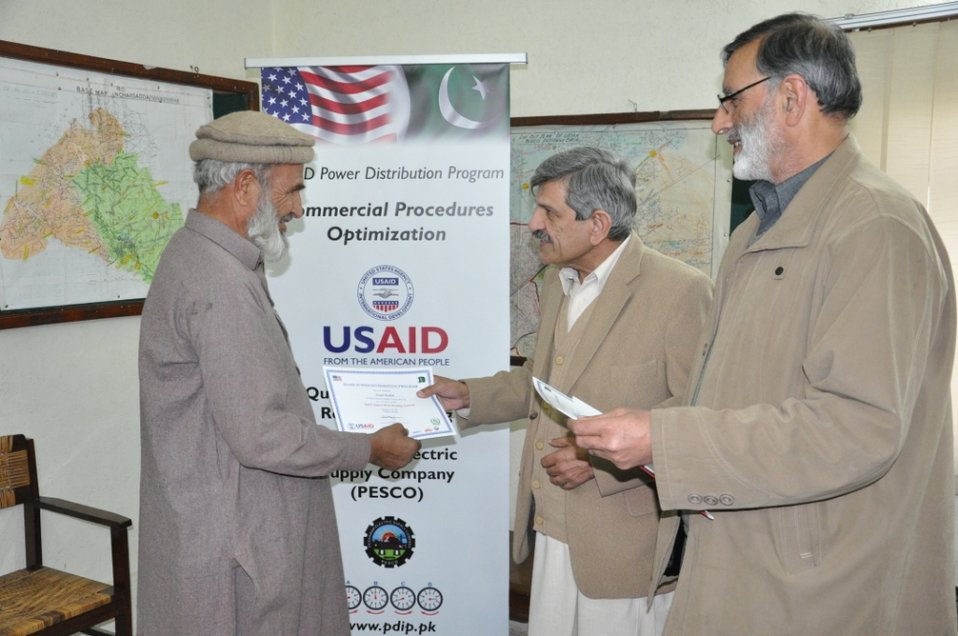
Meter Reading Training

Peshawar, February 27, 2012 - The USAID organized 'Quick Impact Meter Reading Training' at PESCO.